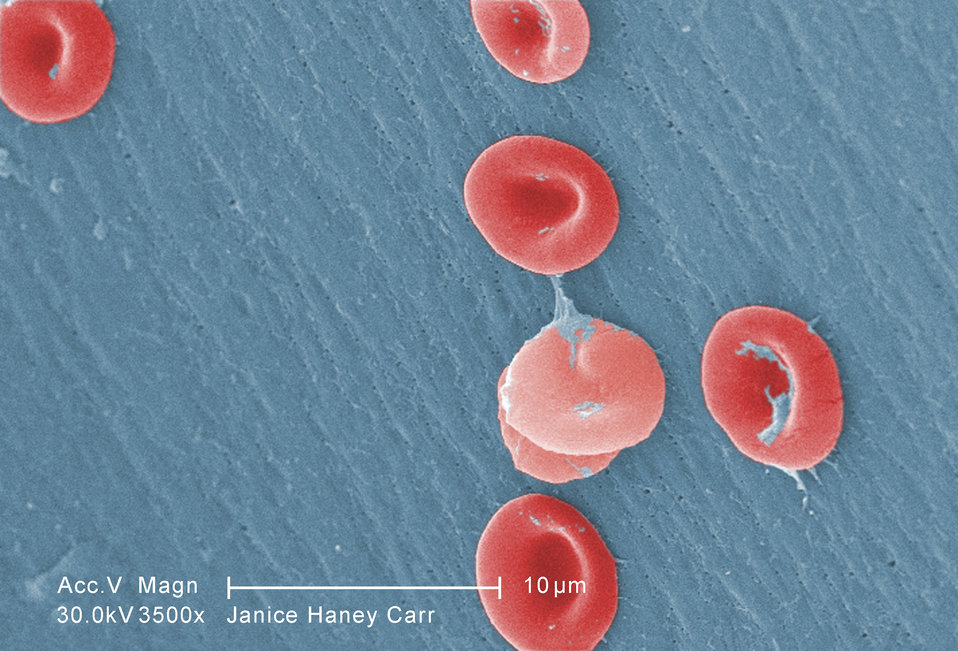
This digitally-colorized scanning electron micrograph (SEM) revealed some of the ultrastructural morphology displayed by red blood cells (RBCs) in a blood specimen of a 6 year old male patient that has sickle cell with hereditary persistence of fetal hemoglobin (S-HPFH). In these individuals, the presence of the persistent fetal hemoglogin reduces the severity of the consequences of the sickle cell disease, thereby, reducing the degree of cellular deformity, i.e., sickling, seen in the sickled cells.